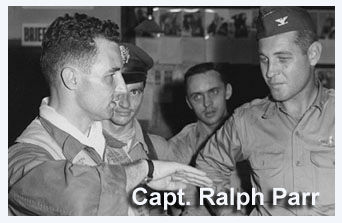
Capt. Ralph S. Parr

Capt. Ralph Parr describes the last aerial victory of the Korean War to Col. Thomas De Jarnette, 4th Wing group commander.